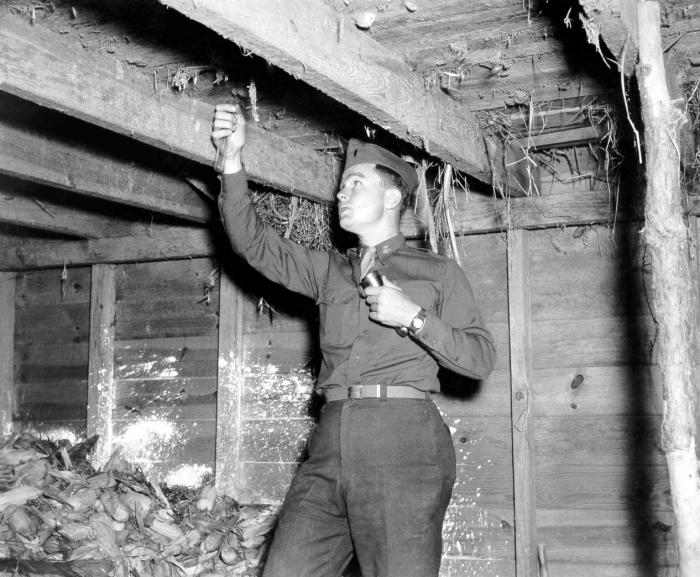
This photograph shows an inspector collecting mosquitoes in chloroform tubes for vector identification.